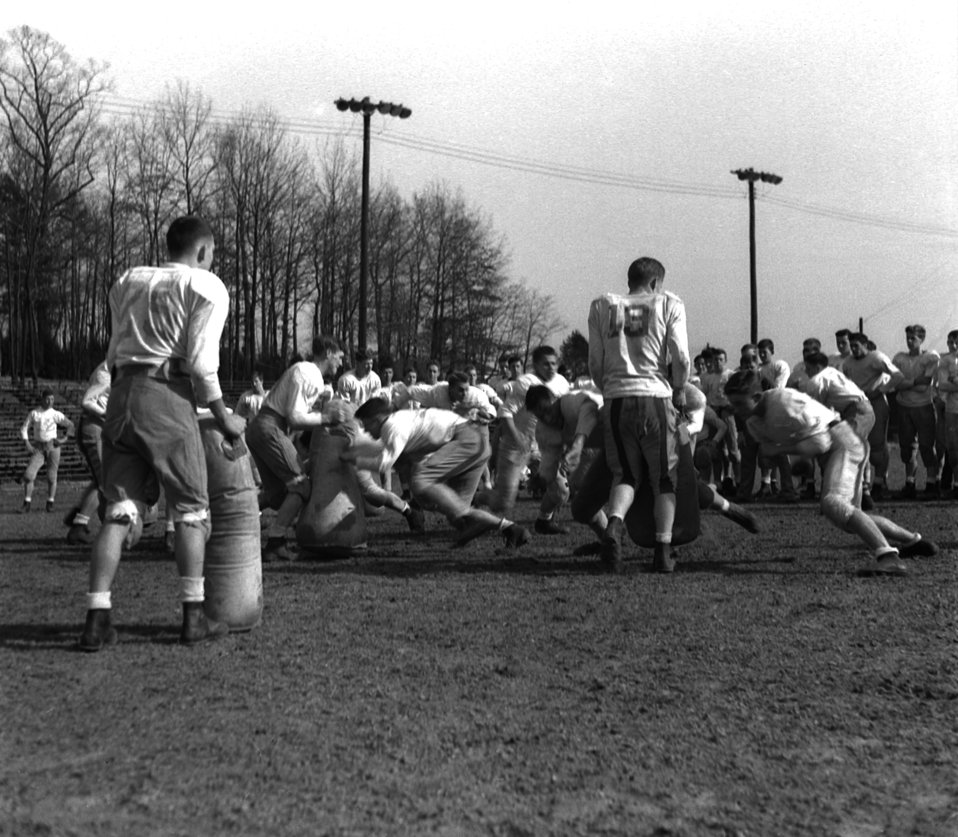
High School Football Spring Practice 3

4380c DOE photo by L. P. Stokes
Oak Ridge Tennessee 3-10-1948